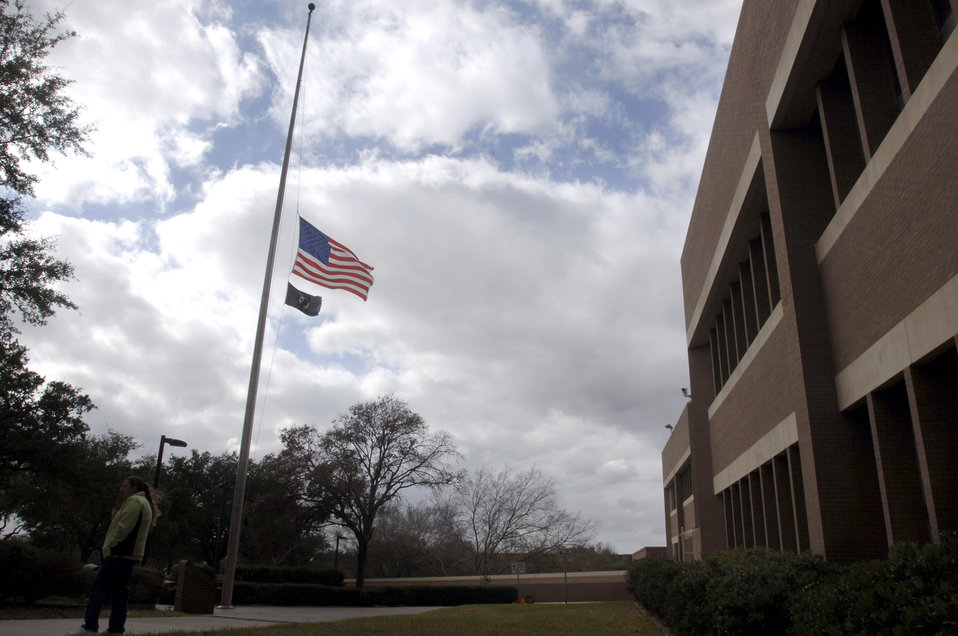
Joint operations center keeps funeral plan on track

The U.S. flag flies at half-staff at the South Texas Veteran's Health Care System Hospital in San Antonio in honor of President Gerald R. Ford, 38th president of the United States, who died Dec. 26.